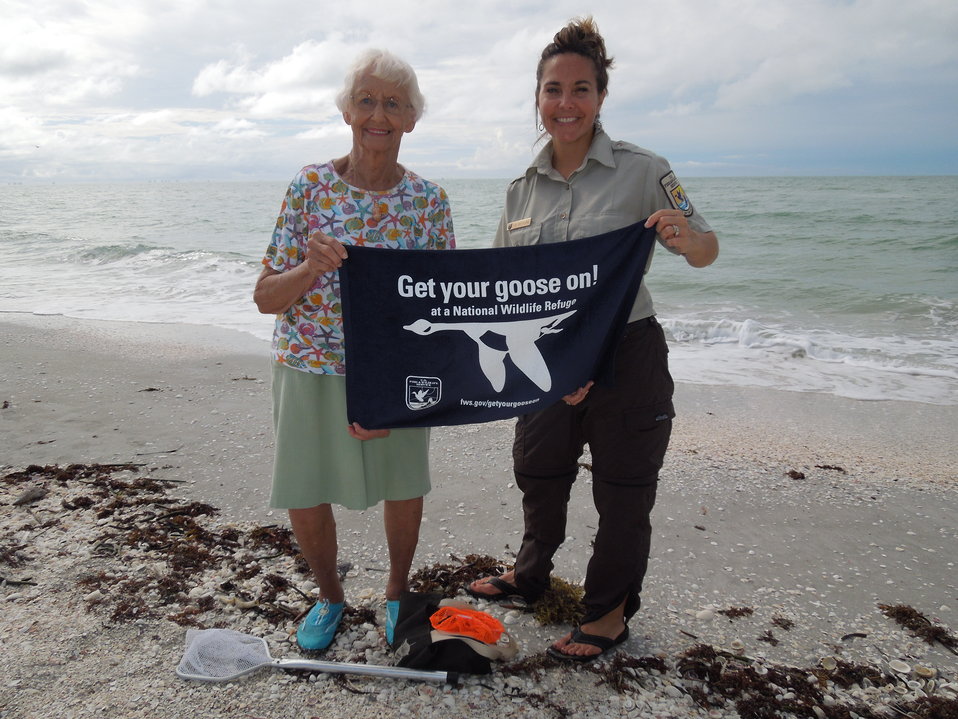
GYGO! at J.N. 'Ding' Darling National Wildlife Refuge

Ms. Dottie from the Shell Museum and Ranger Westland Get Their Goose On at Ding Darling NWR!